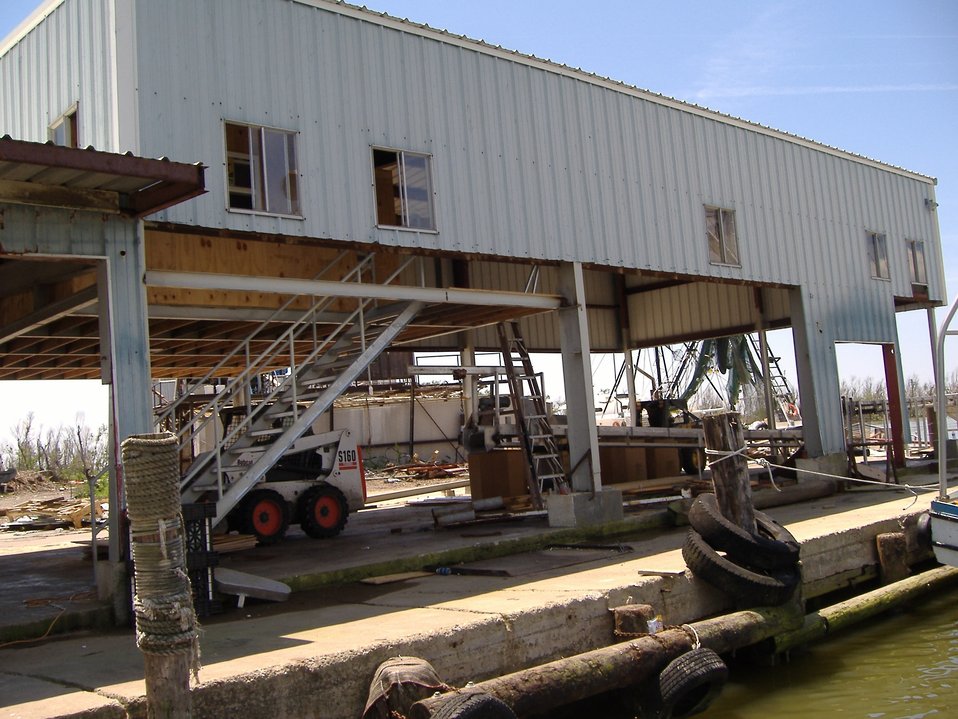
The aftermath of Katrina. Signs of recovery in the local fishing community as plant being repaired.